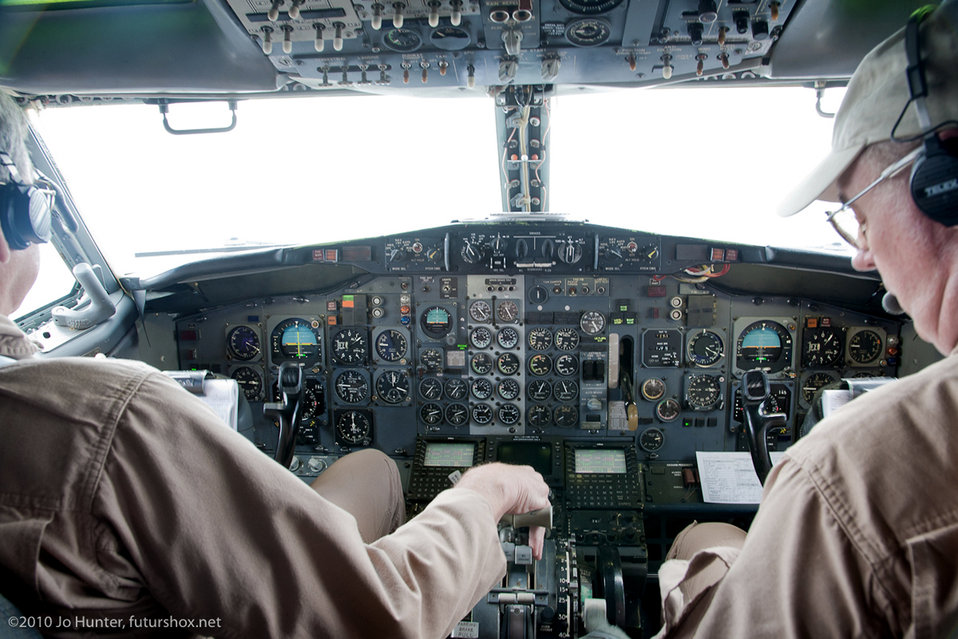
T-43 retirement

Lawrence Humphrey (left) and Mike DeSpain fly a T-43 Sept. 1, 2010. The T-43, a combat systems officer training aircraft since 1973, was officially retired Sept. 17, 2010.